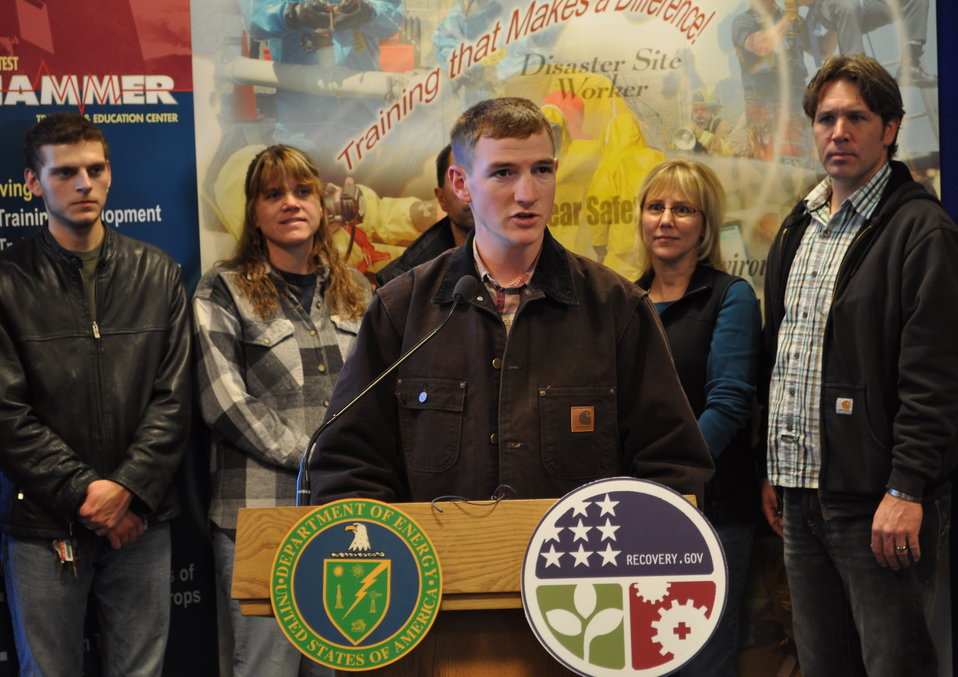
Hanford - Senator Murray visit

Senator Patty Murray (D-Wash.) held a press conference at the Hanford Site’s HAMMER [Hazardous Materials Management & Emergency Response] worker training facility, on November 12, 2009. Murray made particular note of the jobs being created at Hanford and made special mention of newly hired worker Ty Rose.
Rose is a former platoon commander for the U.S. Marine Corps. He finished a tour in Iraq in 2008, but soon found himself out of work -- for almost five months.
He attended a service academy conference in Washington DC in May 2009. While he was there he met representatives from CH2MHill Plateau Remediation Company, who perform work on Hanford’s Central Plateau. Rose was offered a job on the spot as a field supervisor.